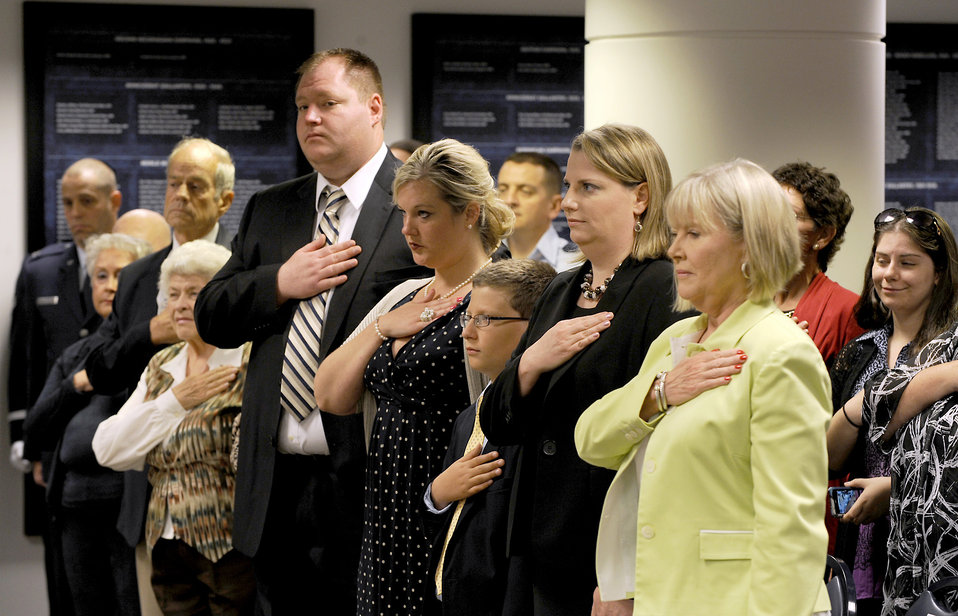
Former U-2 pilot posthumously awarded Silver Star

(From right) Suzie Schwartz, wife of Air Force Chief of Staff Gen. Norton Schwartz, and family members of Capt. Francis Gary Powers stand for the National Anthem during the posthumous presentation of the captain’s Silver Star on June 15, 2012, in the Pentagon. Captain Powers was shot down over the Soviet Union on May 1, 1960, and received the decoration for the heroism he displayed while held prisoner by the Soviets. He was released in 1962 but subsequently died in a 1977 helicopter crash.